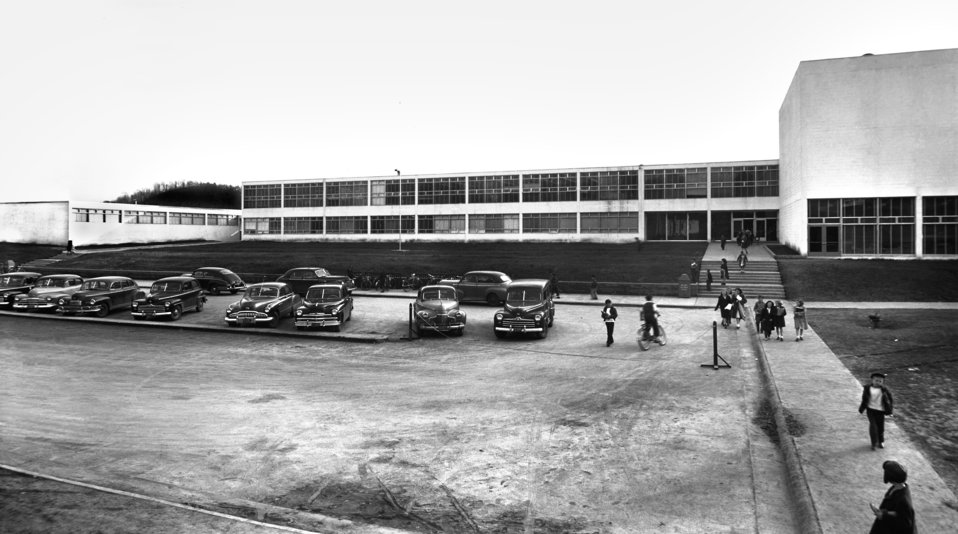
Willow Brook School 1949 Oak Ridge

5768-1 DOE photo Ed Westcott 12-7-1949 Oak Ridge Tennessee